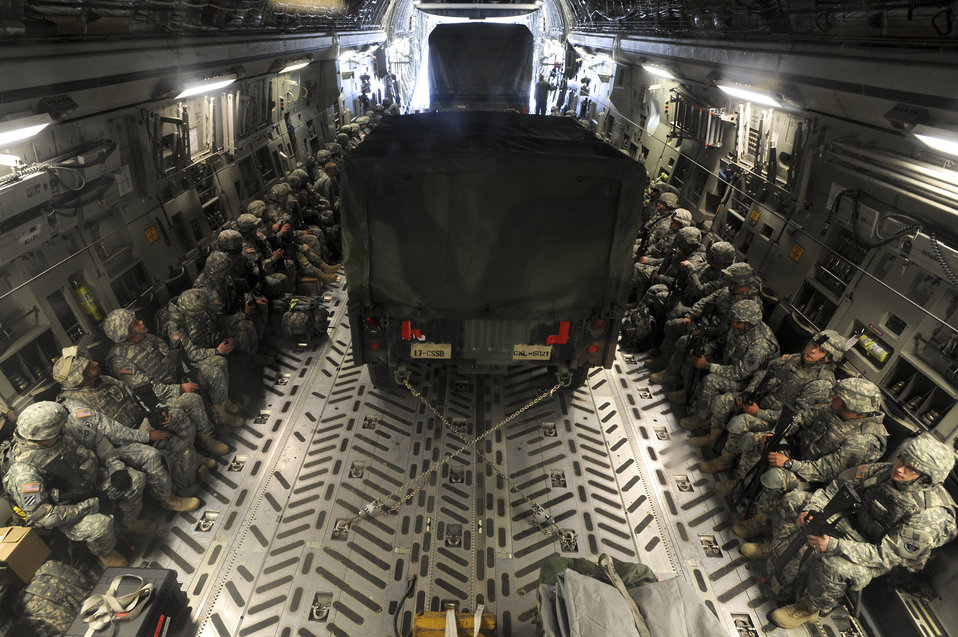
Elmendorf Airmen support Army's Operation Arctic Response

Members from the 17th Combat Service Support Battalion out of Fort Richardson, Alaska, wait on board a C-17 Globemaster III before take off Aug. 24 at Elmendorf Air Force Base, Alaska. Operation Arctic Response is a joint operation and total force integration exercise where Air Force active-duty and National Guard members aid the Army in deploying to the exercise site.